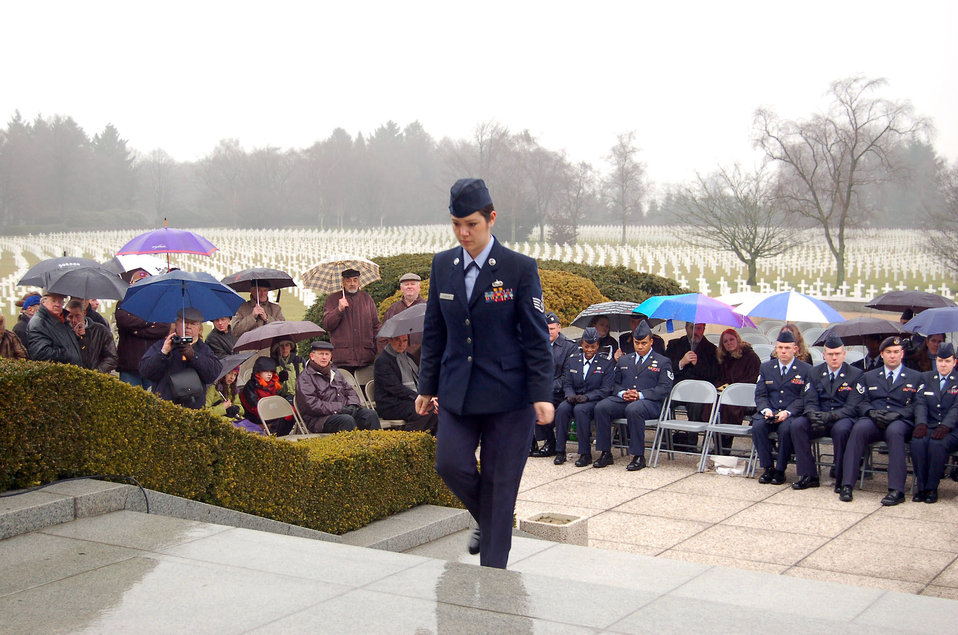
World War II MIAs recovered in Germany

Staff Sgt. Melissa Johnson walks up the steps of the Henri-Chapelle Cemetery and Memorial Feb. 20 in Belgium during a ceremony honoring nine previously missing in action Airmen. Sergeant Johnson, who works at the NATO Programming Centre's customer service desk, placed a rosette next to Staff Sgt. Walter O. Schlosser's name, as both hail from Michigan.